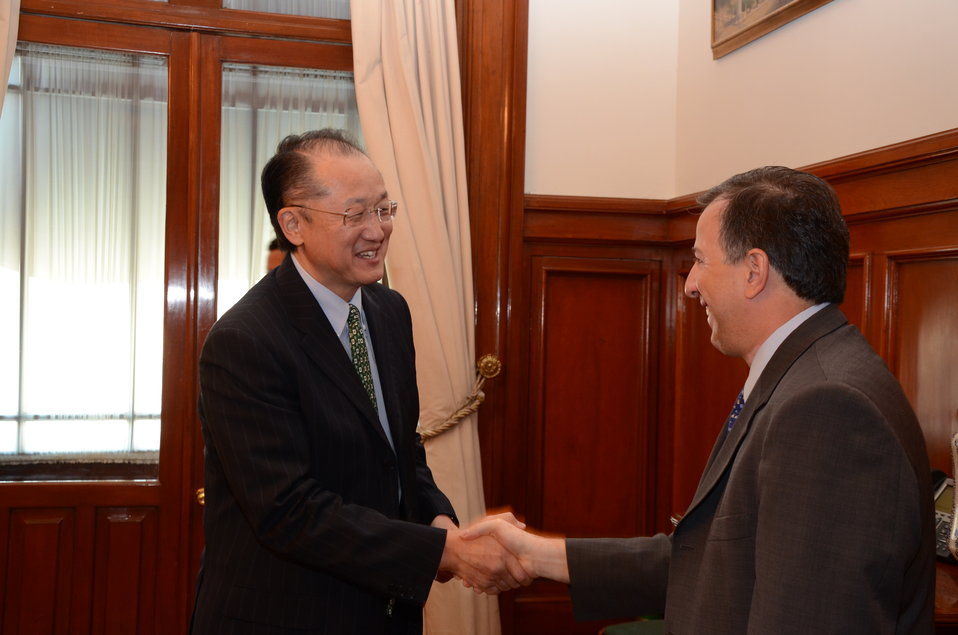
Dr. Jim Yong Kim Meeting with Mexican Finance Secretary Jose Antonio Meade

Dr. Jim Yong Kim, President Obama's nominee for the World Bank Presidency, traveled to Mexico City, Mexico today on the eighth country stop of his global listening tour. While there, he met with Mexican Finance Secretary Jose Antonio Meade. They discussed the role of the World Bank in the G-20, the importance of a continued strong relationship between Mexico and the World Bank, and how the institution can continue to help middle-income countries reduce poverty and boost growth.